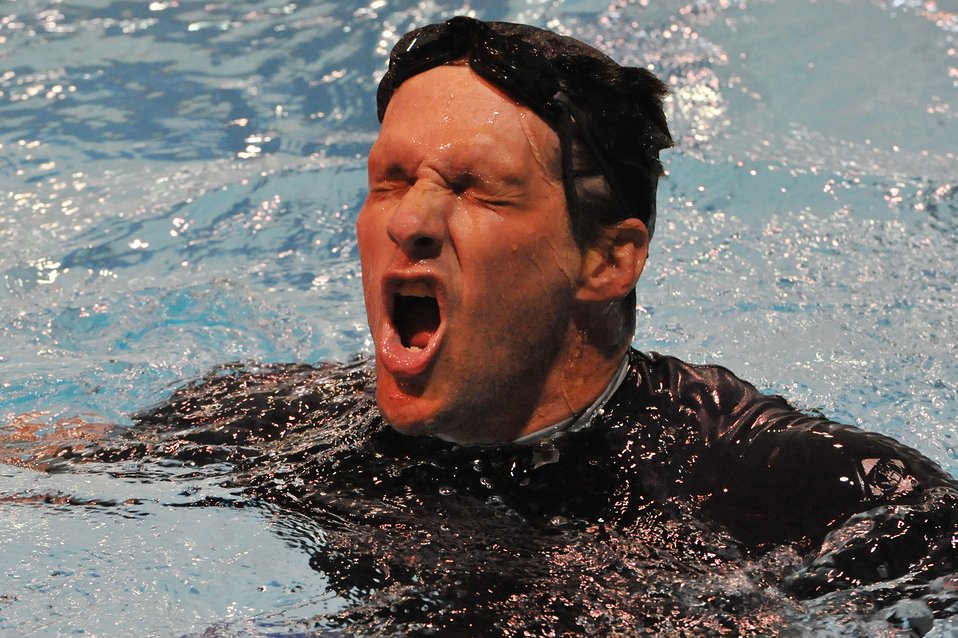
Swimming Prelims

Retired Staff Sgt. Jason M. Morgan competes in swimming competition of
the inaugural Warrior Games at the U.S. Olympic Training Center in
Colorado Springs, Colo., May 18, 2011. Some 200 wounded warriors and
disabled veterans from all the military services are competing in
paralympic-style athletic events May 16-21.